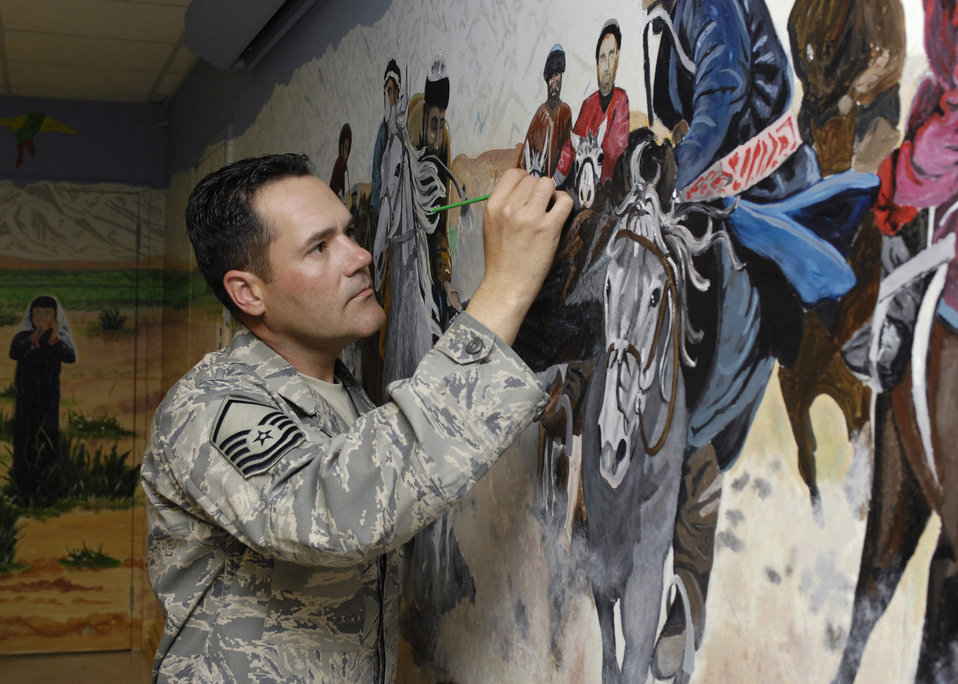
A little more red here...

Master Sgt. Albert Greig performs a final touch April 24 to a conference room mural he and 38 other artists painted in Craig Joint Theater Hospital at Bagram Air Base, Afghanistan. The mural features local culture and a view of the mountains near the base.